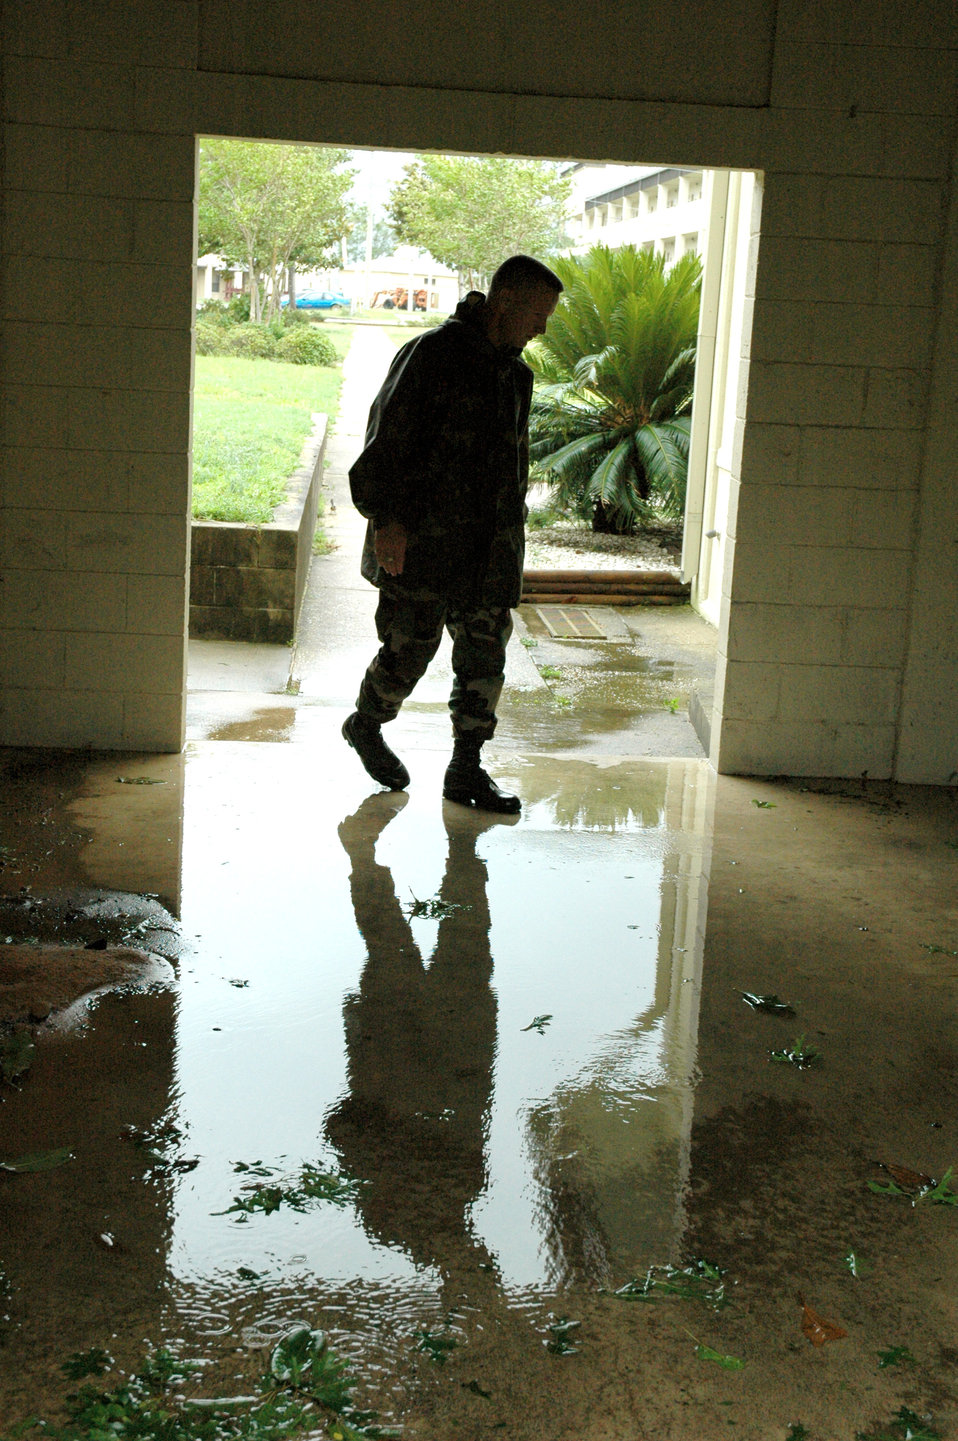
Eglin spared as Hurricane Dennis flexes

EGLIN AIR FORCE BASE, Fla. -- Chief Master Sgt. Wade Johnson looks over water damage to the enlisted professional development center and neighboring dormitories caused by Hurricane Dennis on July 10. Unlike Hurricane Ivan, Hurricane Dennis did not cause as much damage to the base. Chief Johnson is the 96th Air Base Wing command chief master sergeant.